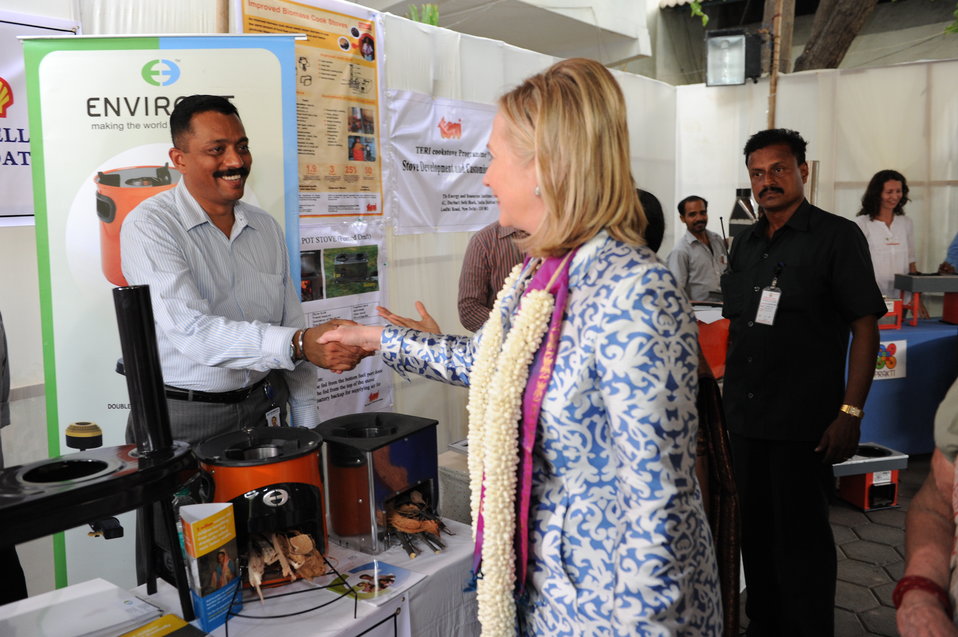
Secretary Clinton Tours an Exhibition of Clean Cookstoves

U.S. Secretary of State Hillary Rodham Clinton tours an exhibition of clean cookstoves in Chennai, India, on July 20, 2011. [Paul Cohn/ State Department photo]